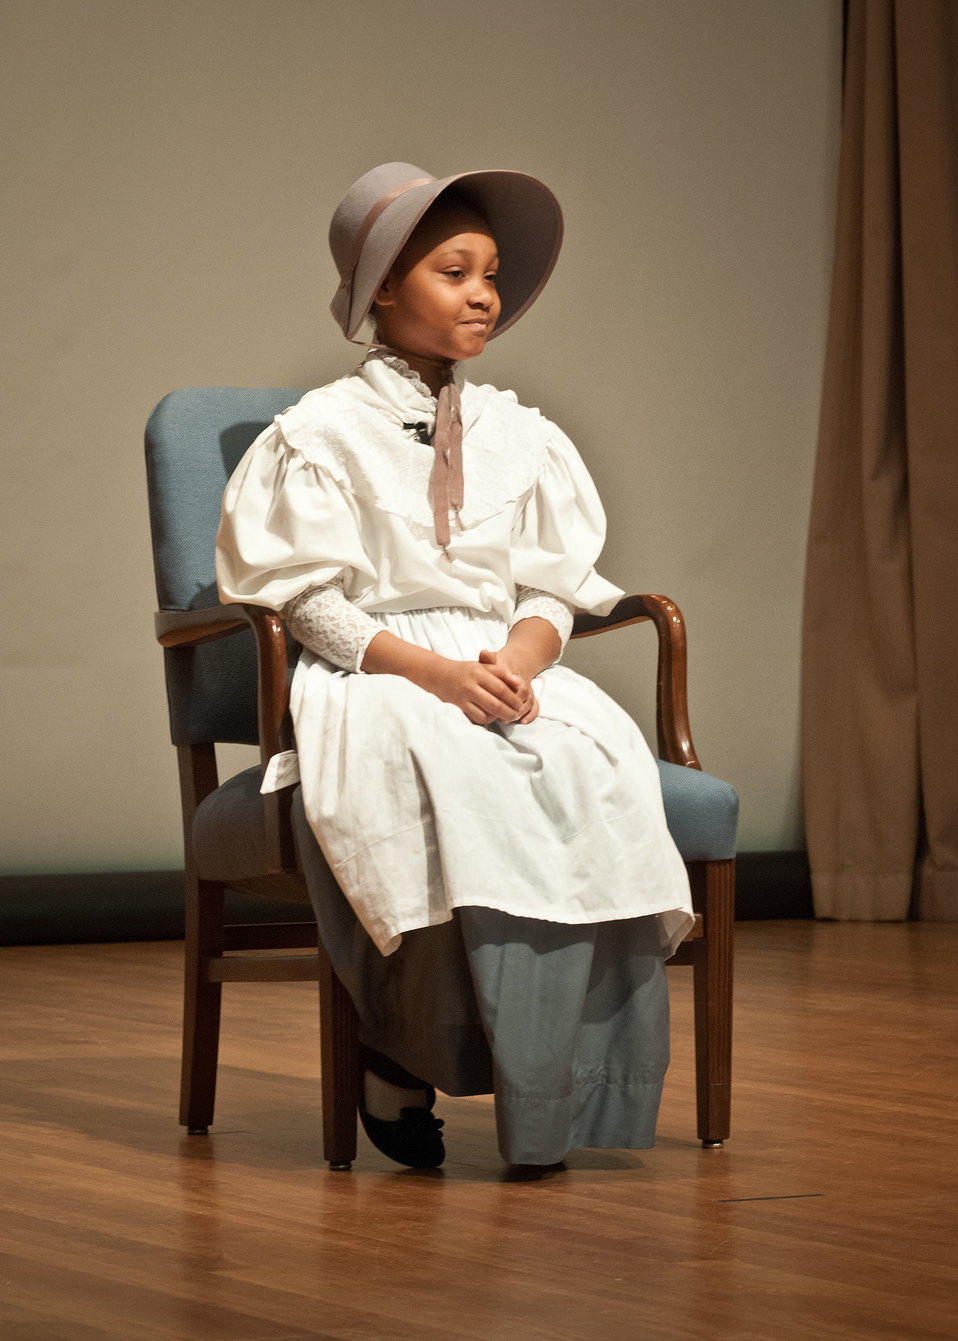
Aja Shakira Ali Muhammed a nine year old fourth grader at Hyde-Addison Elementary School in Georgetown, Washington, D.C. gave a striking rendition of the the narrative Sojourner Truth delivered at the 1851 Ohio Women Rights Convention, “Ain’t I A Woman” to a standing room only crowd at the United States Department of Agriculture Black History Month celebration “Black Women in American Culture and History” in Washington, D.C. on Thursday, February 16, 2012.